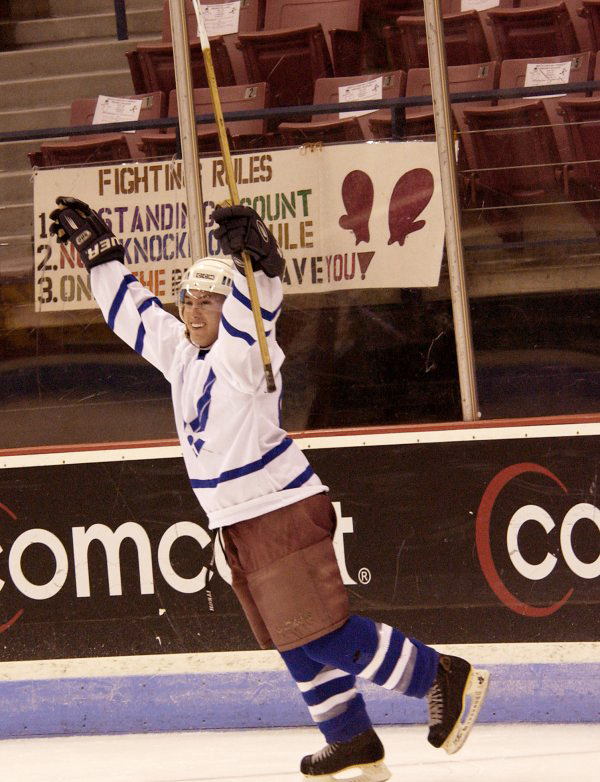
Hockey time

CHARLESTON, S.C. -- Paul Goff celebrates after scoring the game-tying fifth goal for the Air Force hockey team from nearby Charleston Air Force Base. The Airmen defeated the Navy team 6-5.